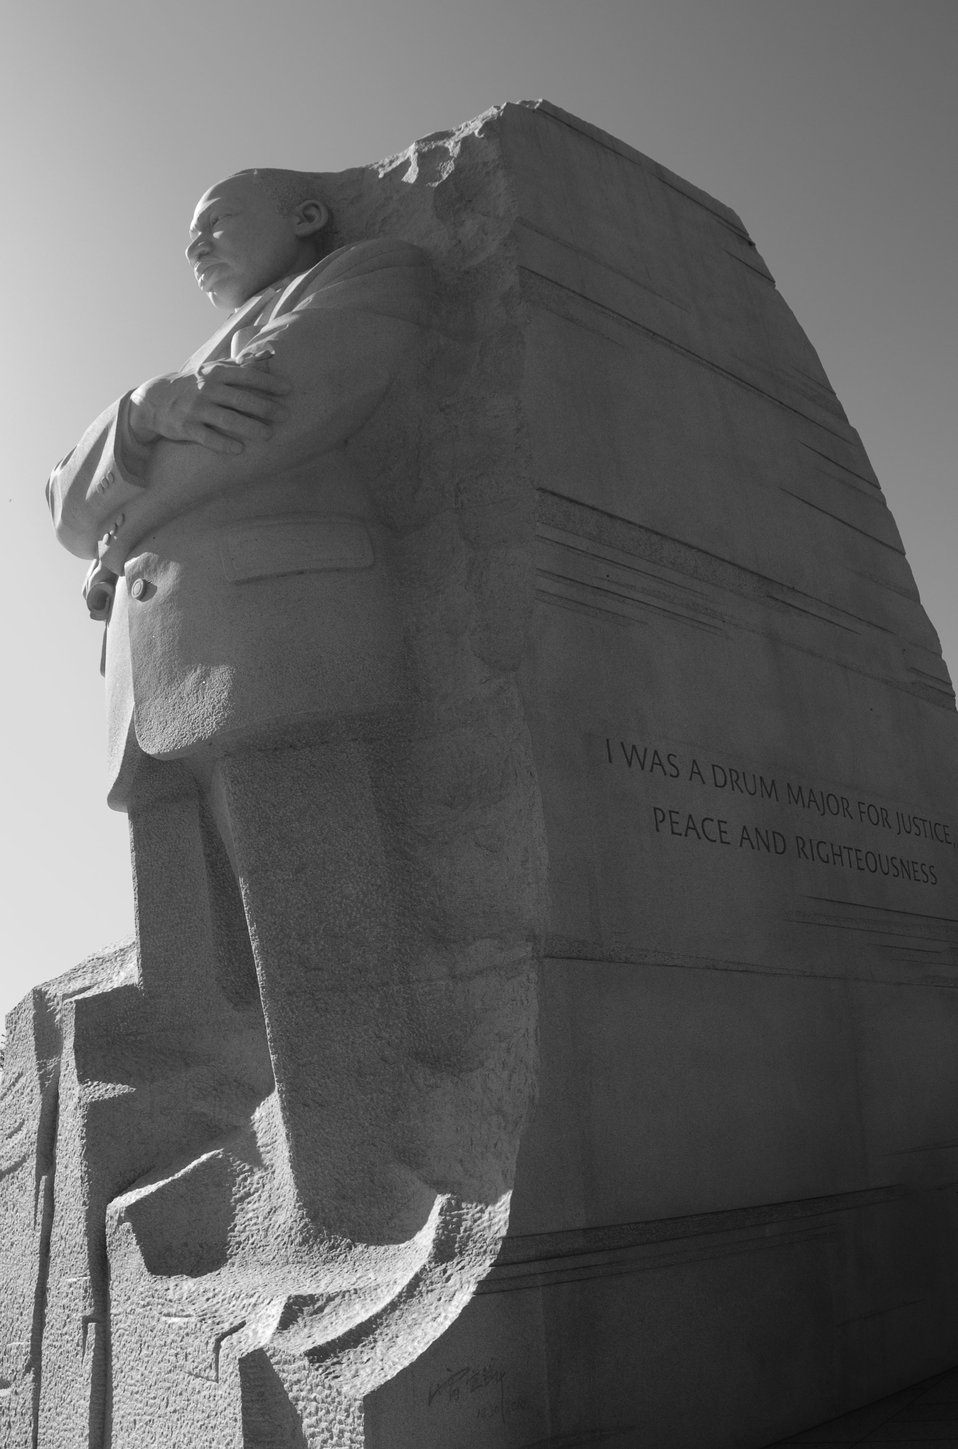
Martin Luther King, Jr. Memorial in Washington, DC, on Saturday, October 8, 2011.